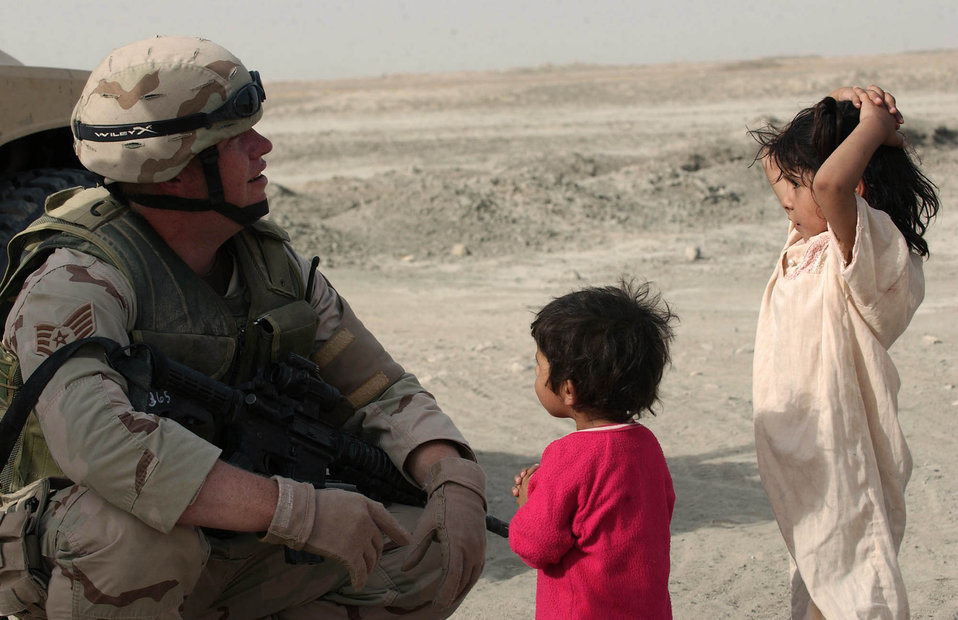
Security forces Airmen establish early warning network with locals

IRAQ -- Staff Sgt. James Partin talks to local children during an Operation Kaleidoscope mission recently. The new program adds extra protection to perimeter defense procedures and gives locals a point of contact to call if they see suspicious activity that could harm U.S. or coalitions forces. Sergeant Partin is assigned to the 407th Expeditionary Security Forces Squadron at nearby Tallil Air Base.